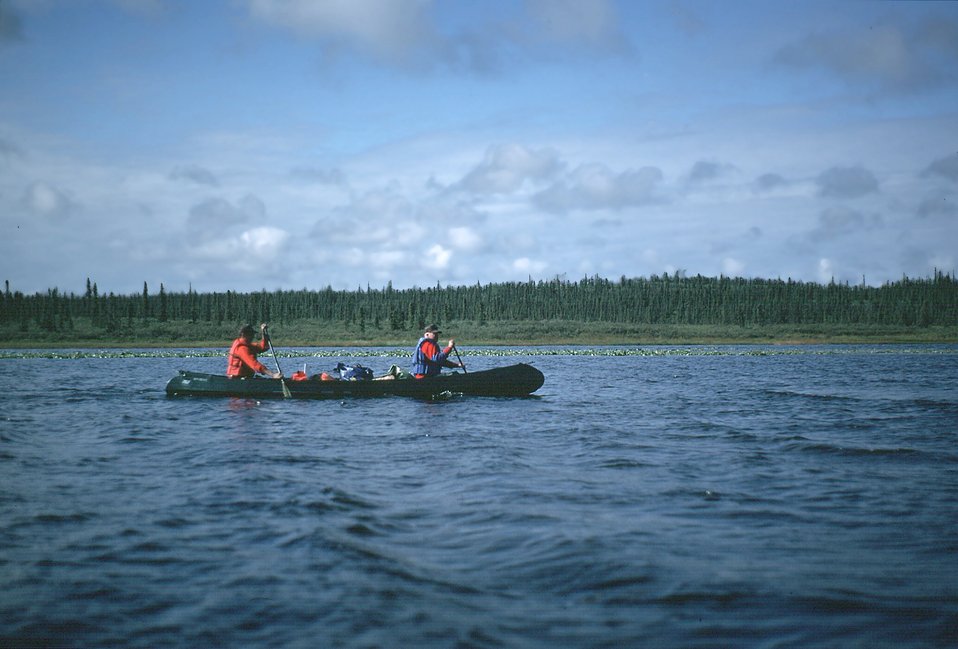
Canoeing West Fork Gulkana NWSR, Alaska